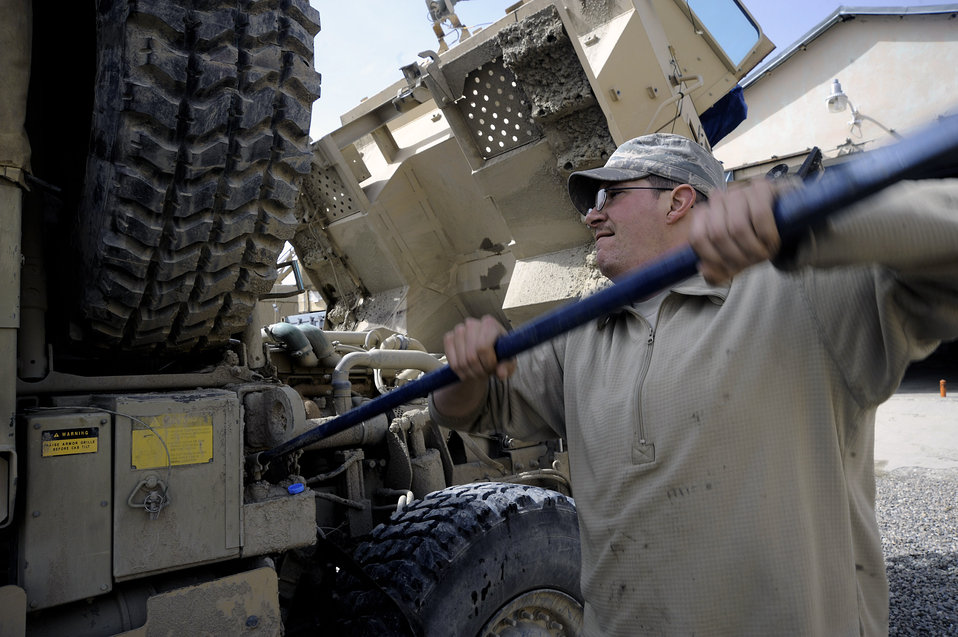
Vehicle maintainers travel rough road

Staff Sgt. Robert Reich lowers the spare tire for a medium yactical vehicle April 20 at Forward Operating Base Gardez, Afghanistan. Sergeant Reich is a vehicle maintainer assigned to the Paktya Provincial Reconstruction Team. He is deployed from the 35th Logistics Readiness Squadron from Misawa Air Base, Japan.